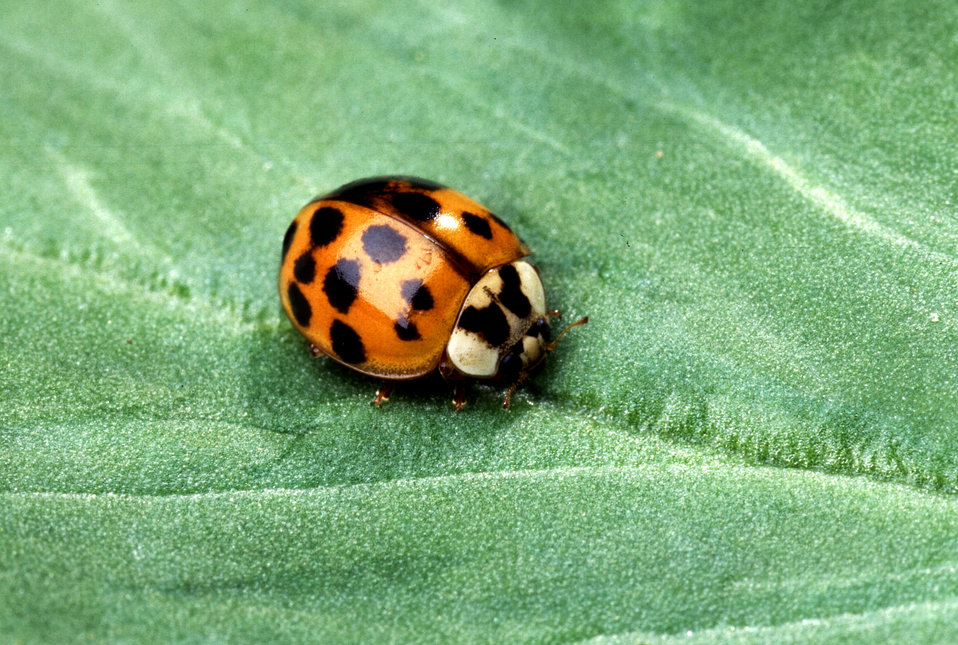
The Asian multicolored lady beetle (Harmonia axyridis) is easy to identify from its false 'eyes' and twin white football-shaped markings behind the head. The insects range from black to mustard in color with zero to many spots. A common U.S. form is mustard to red and has 16 or more black spots.